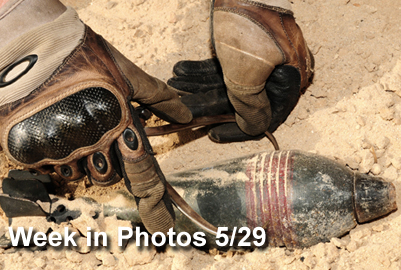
Air Force Week in Photos for May 29 highlights photos from around the Air Force. In this photo by Senior Airman Courtney Richardson, an Airman measures simulated unexploded ordnance with a caliper during training May 27 at an air base in Southwest Asia.